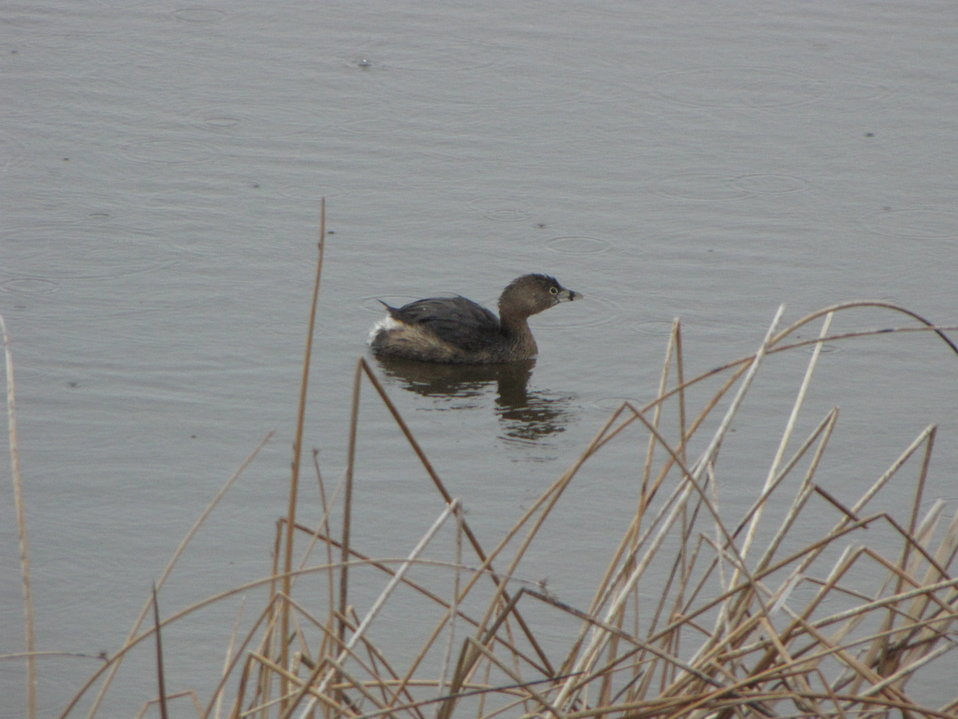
Pied-billed Grebe

This Pied-billed grebe, ignoring the rain on the waters, searched and called for a mate on the wetland in front of the Wildlife Education Center at the Bear River Migratory Bird Refuge in Utah.